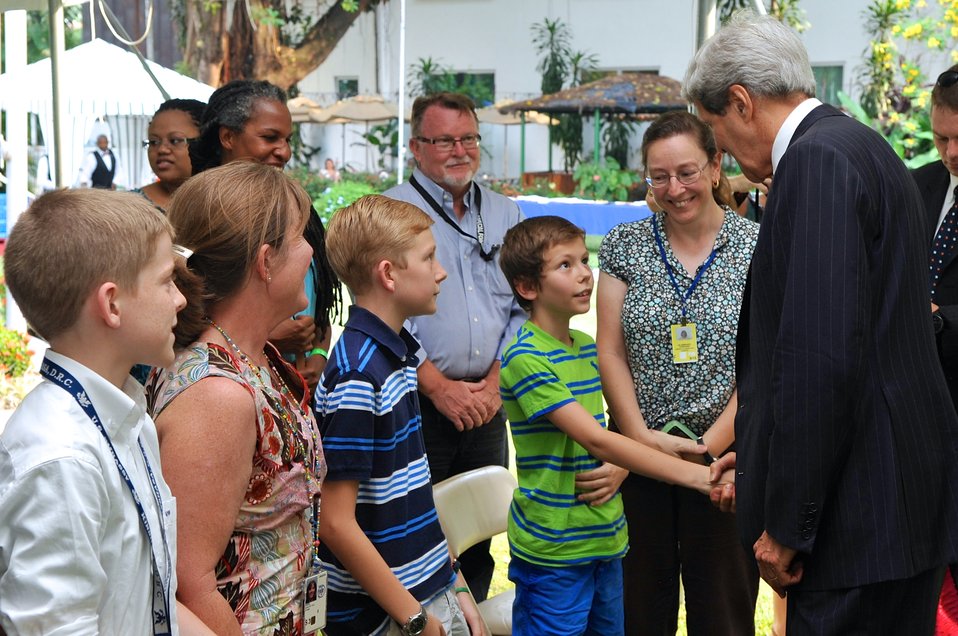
Secretary Kerry Meets Family Members of Embassy Kinshasa Employees

U.S. Secretary of State John Kerry shakes hands with an 11-year-old boy - the same age he was when his father joined the Foreign Service - after addressing employees at Embassy Kinshasa during a visit to the Democratic Republic of Congo on May 3, 2014.